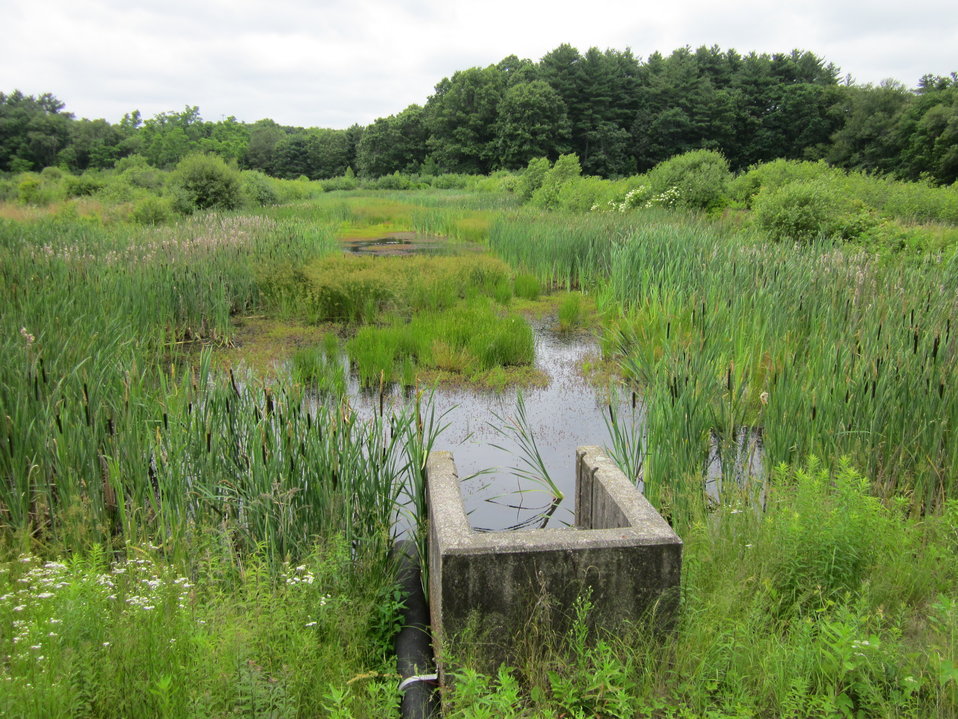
Warm water ponds

North Attleboro, MA, June 2012: Several ponds on the 235-acre North Attleboro National Fish Hatchery give the facility the capability of producing warm water fish species.